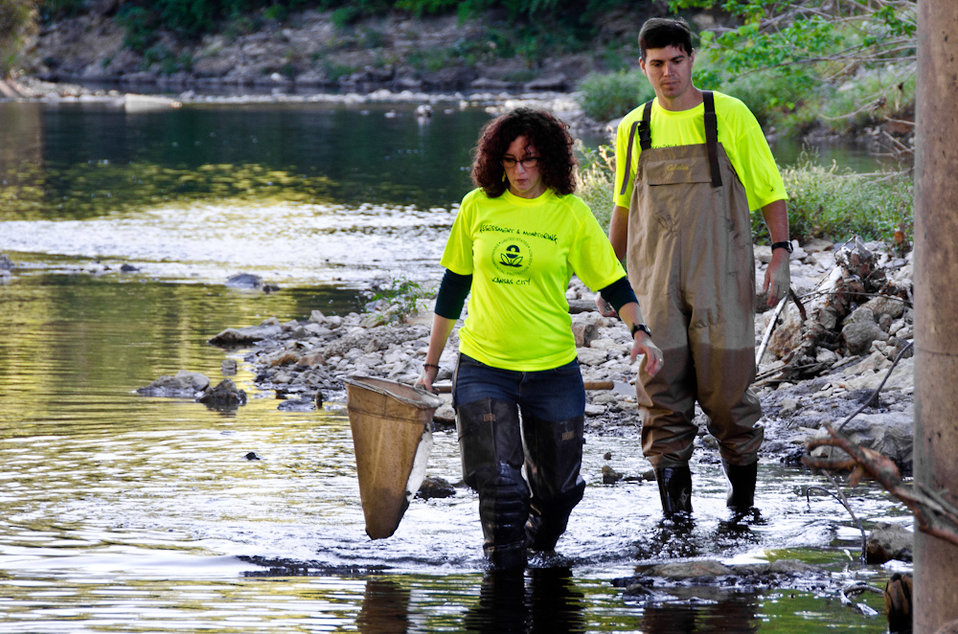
September 26, 2011 EPA partners with Blue River Watershed Association for Children's Health Month

US EPA Region 7 scientists Todd Phillips and Roberta Vogel-Leutung, test the water quality at Indian Creek in Kansas City, Mo. on September 26, 2011.

As part of Children’s Health Month, EPA Region 7 is partnering with Blue River Watershed Association, who is hosting an educational event for Center High School at the creek on October 7, 2011.

US EPA photo by Shannon Bond

EPA Region 7 serves IA, KS, MO, NE follow more EPA activity there @ www.facebook.com/USEPAHousatonic?ref=ts#!/eparegion7